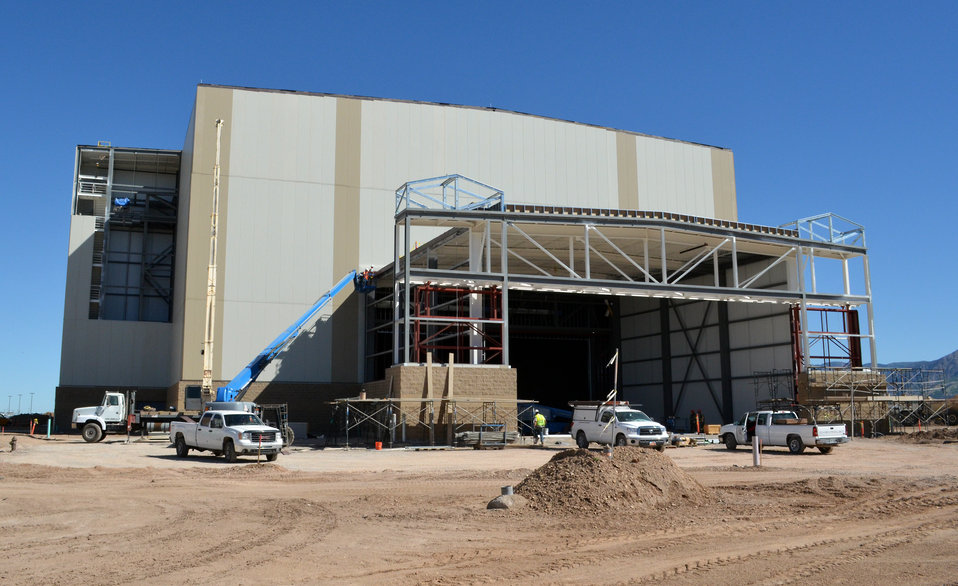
Radar Cross Section Test Facility at Hill Air Force Base

Construction continues at the F-22 Radar Cross Section Test Facility at Hill Air Force Base, Utah, June 20, 2012. The U.S. Army Corps of Engineers Sacramento District is overseeing construction of the 49,827-square-foot facility, which will used to test the radar signature of the F-22 and other aircraft to ensure that required levels of radar stealth are met.